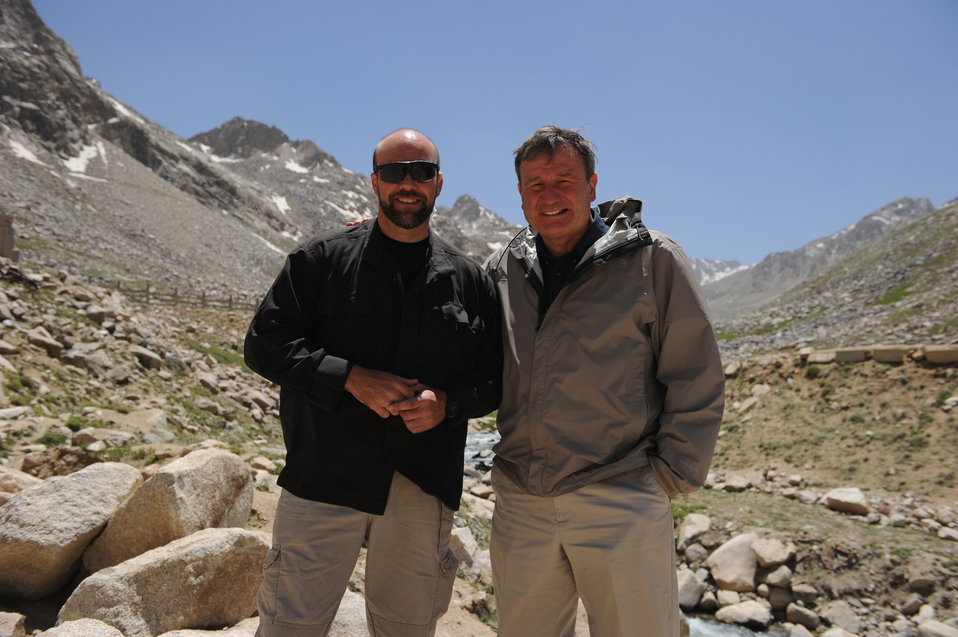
U.S. Ambassador Karl W. Eikenberry attends a ceremony to mark the beginning of renovations at the Salang Tunnel on the border of Parwan and Baghlan Provinces, Afghanistan, on Wednesday, June 15, 2011. (S.K.Vemmer/Department of State)